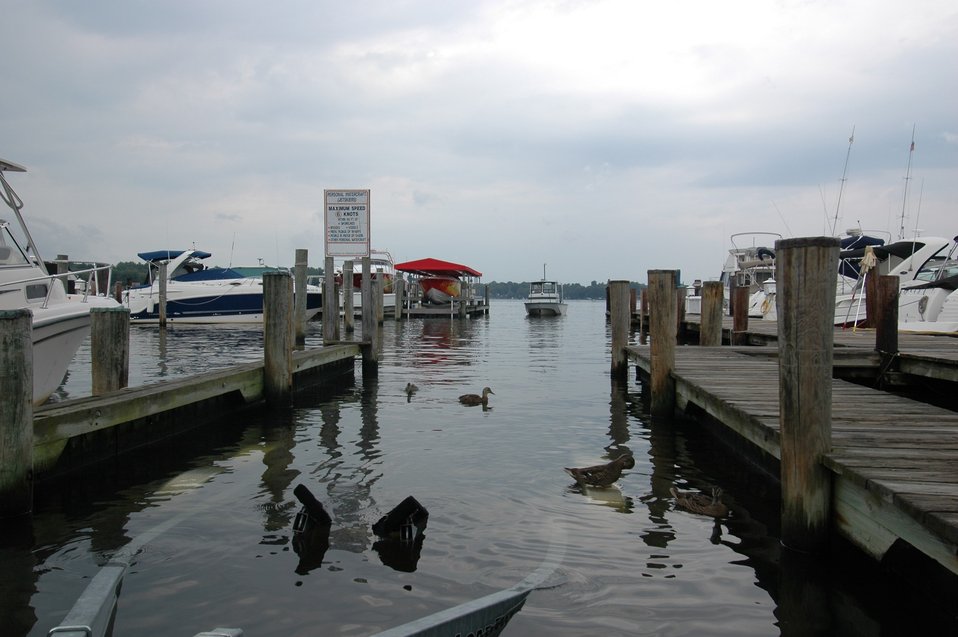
Hurricane preparedness at Chesapeake Bay Field Office in Maryland.

Moving a field station boat to higher ground.